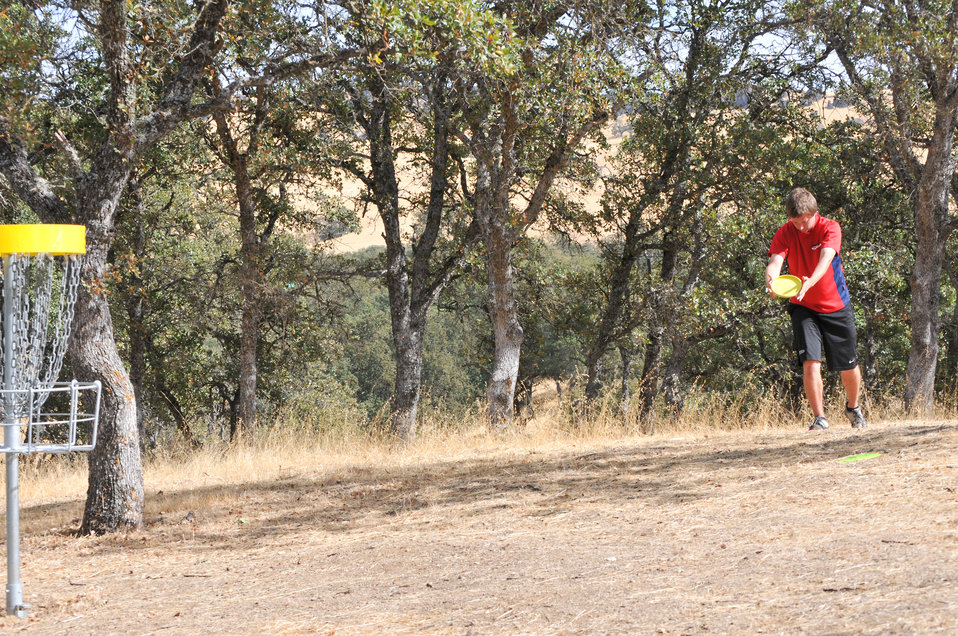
BLACK BUTTE LAKE, Calif. (Oct. 18, 2010) -- A disc golfer putts during the Professional Disc Golf Association's Norcal Series Championships here Oct. 16. The U.S. Army Corps of Engineers Sacramento District’s Black Butte hosted the tournament Oct. 15-17 at its new disc golf course, built on park lands by The Orland Aces disc golf club under a partnership with the Corps. More than 150 disc golfers from as far as Texas competed in the tournament.